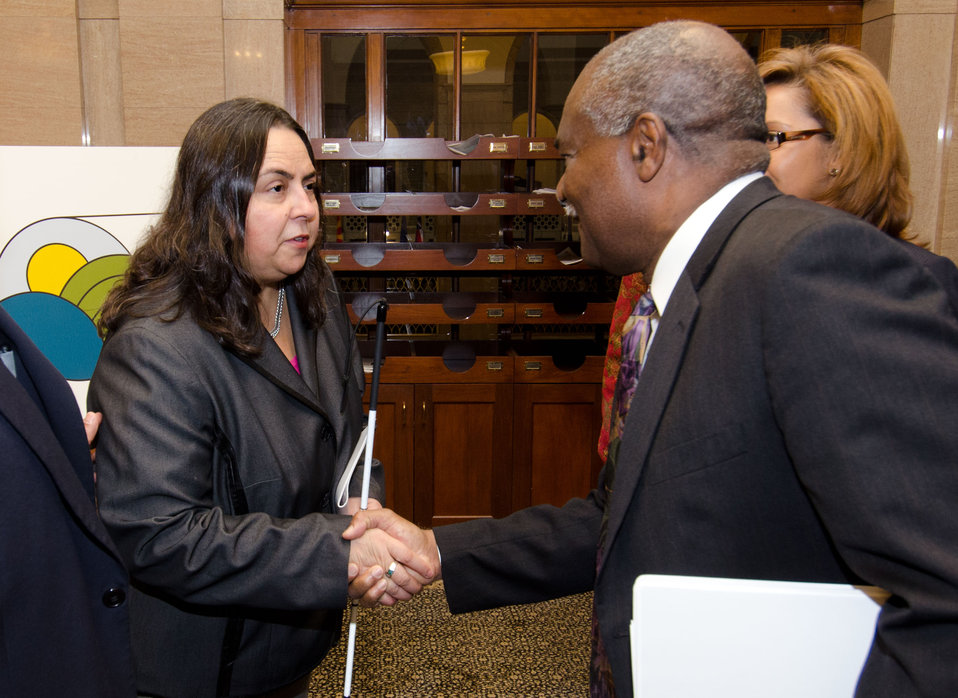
United States Department of Labor Assistant Secretary for the Office of Disability Employment Policy Kathy Martinez (left) meets United States Department of Agriculture Assistant Secretary for Administration Pearlie Reed shortly before the start of Work Force Recruitment Program’s (WRP) 'Your Key To Hiring Student Interns and Employees with Disabilities” event hosted by the United States Department of Agriculture (USDA) in the Jefferson Auditorium, in Washington, D.C. on Tuesday, February 7, 2012.